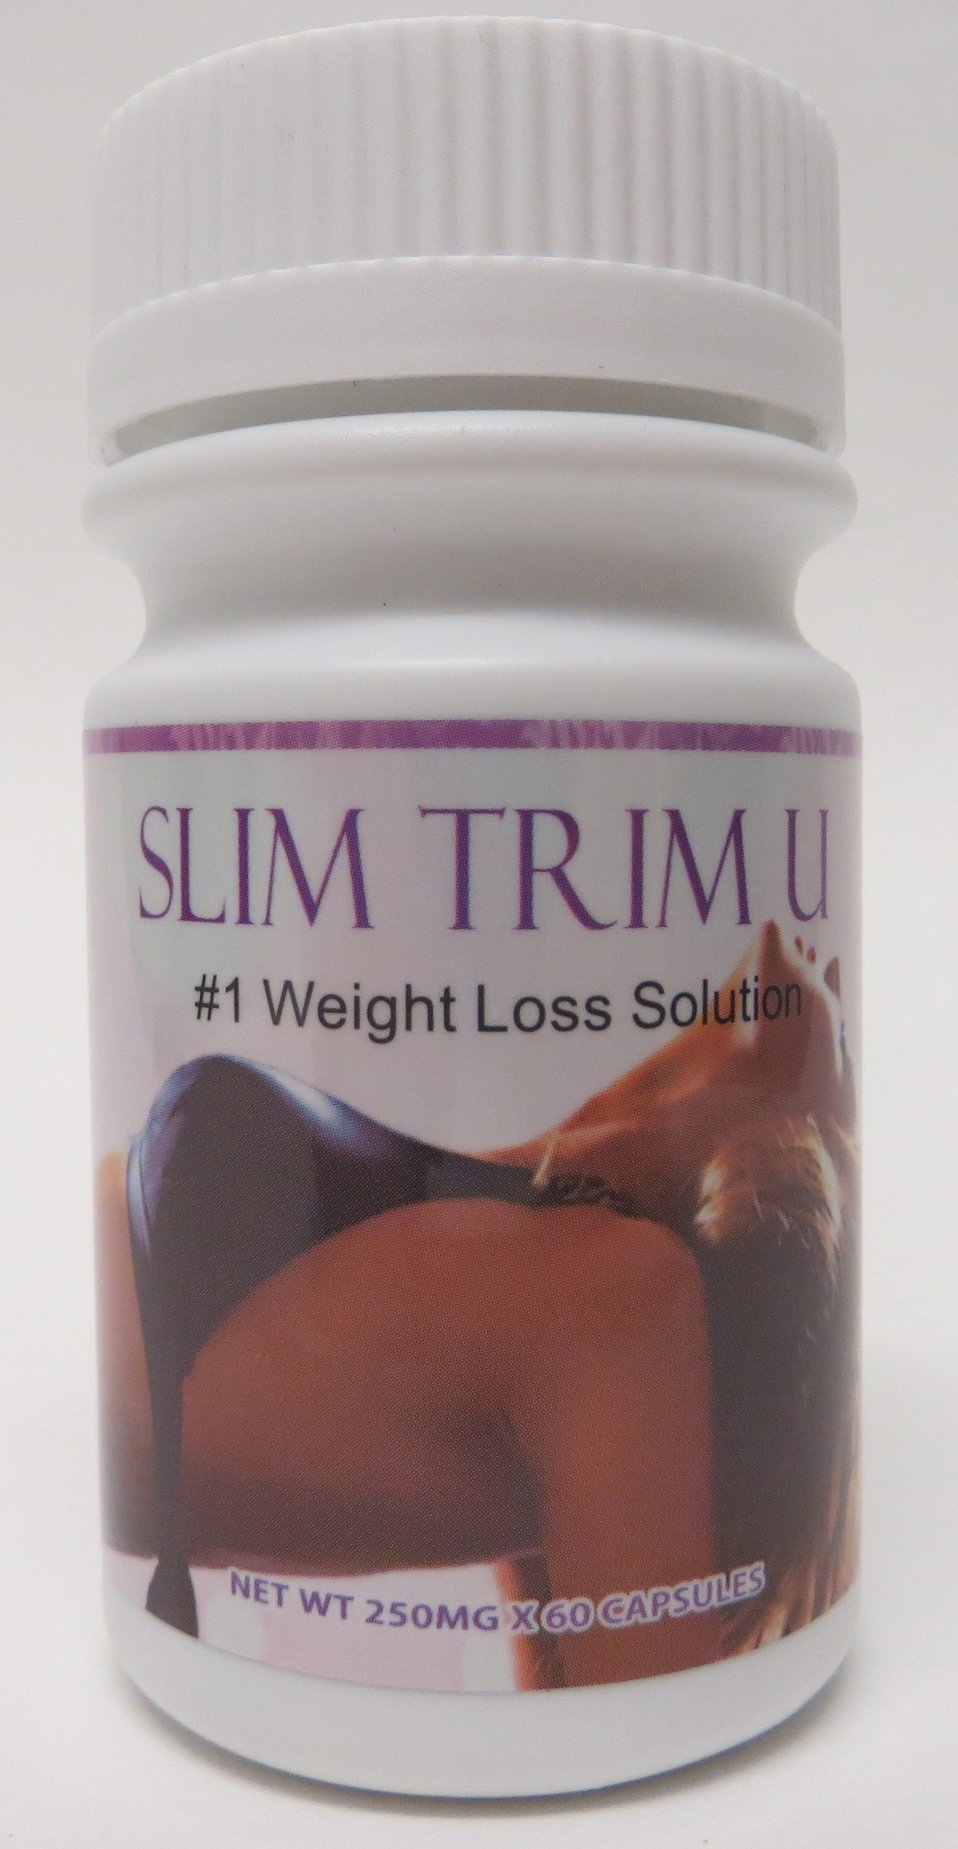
Slim Trim U

May 5, 2014 - The FDA is advising consumers not to purchase or use Slim Trim U, a product promoted and sold for weight loss. The product was found to contain undeclared sibutramine. For more information, go to www.fda.gov/drugs/resourcesforyou/consumers/buyingusingme...

And read this Consumer Update: Beware of Fraudulent ‘Dietary Supplements’